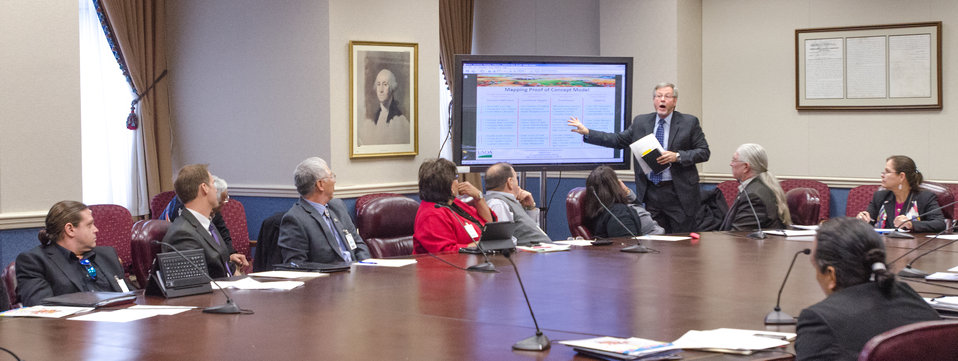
U.S. Department of Agriculture (USDA) Office of the Chief Information Officer Geospatial Information Officer Steve Lowe, talks about Geospatial Information Systems as it applies to Tribal Lands Mapping, during the USDA and American Indian Higher Education Consortium Leadership Group Winter Meeting, at the USDA Whitten Building, Williamsburg Room, in Washington D.C., on Friday, Feb. 8, 2013.